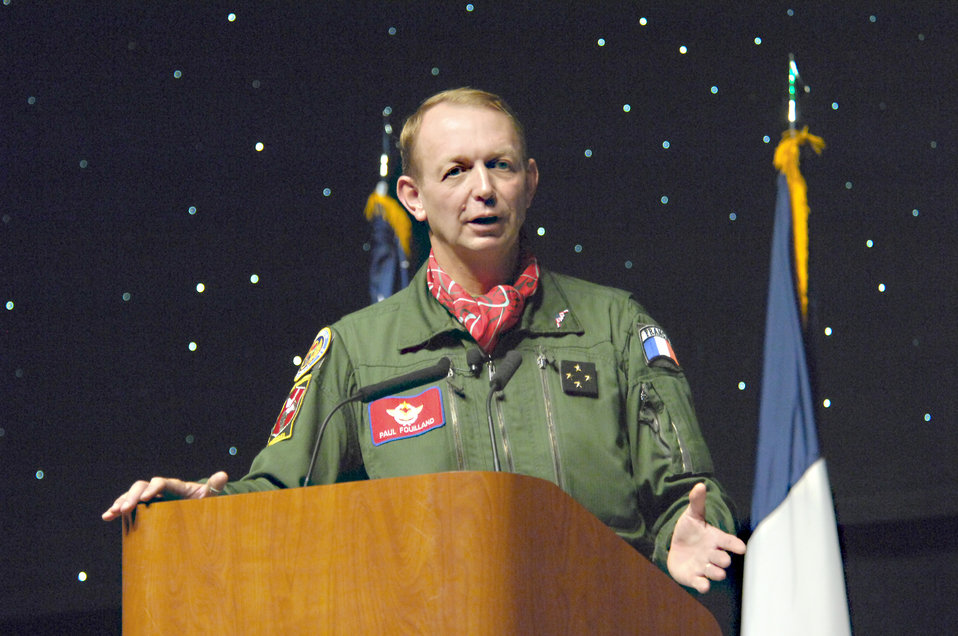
Global Strike Command officials build partnership with French

French Lt. Gen. Paul Fouilland explains the French nuclear deterrence mission at the Air Force Global Strike Command Technology and Innovation Symposium Nov. 17, 2010, at the Shreveport Convention Center in Shreveport, La. During the visit to AFGSC, General Fouilland and a delegation of French military officers also toured a B-2 Spirit and a B-52 Stratofortress, met with weapons system experts, and attended Global Strike Challenge activities. General Fouilland is the French Strategic Air Forces commander-in-chief.